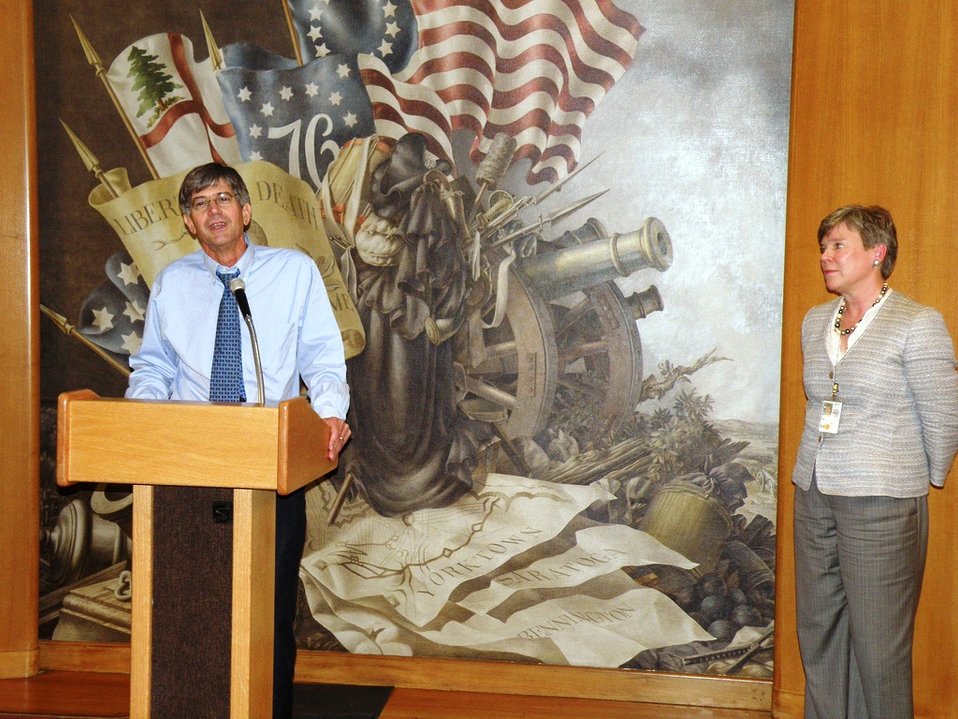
Deputy Secretary Steinberg Addresses State Department Employees

U.S. Deputy Secretary of State James Steinberg, with U.S. Assistant Secretary of State for Arms Control, Verification and Compliance Rose Gottemoeller, addresses U.S. Department of State employees at the new Bureau of Arms Control, Verification and Compliance at the U.S. Department of State in Washington, D.C., on October 1, 2010.